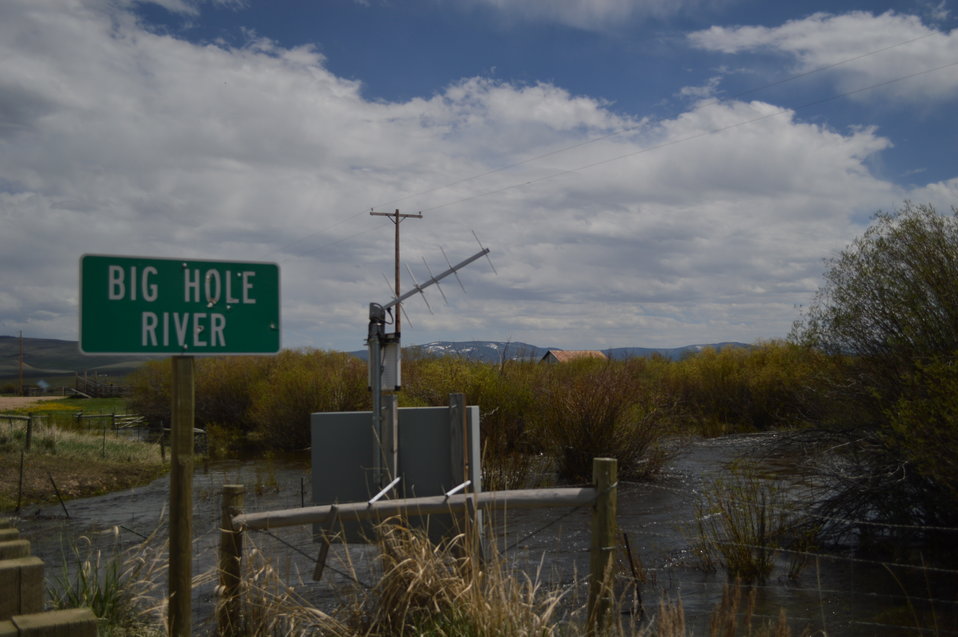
Regional Leadership Visit to Montana 2014